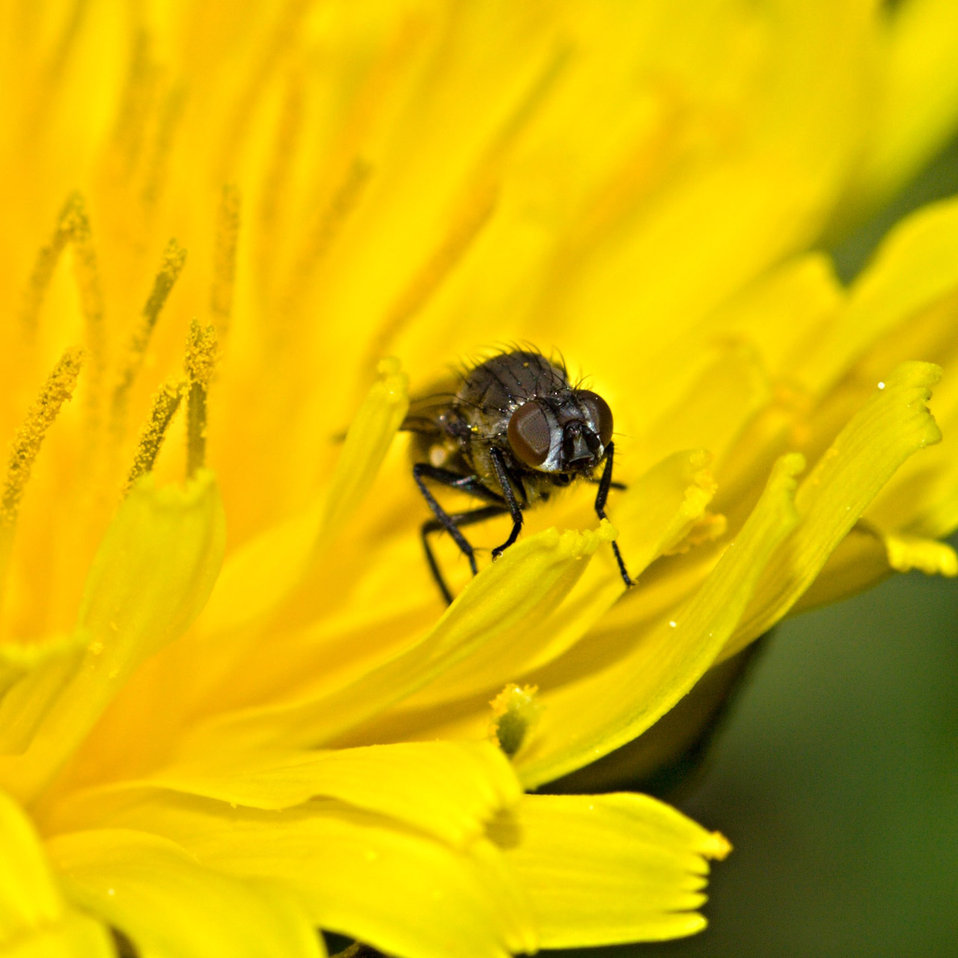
I am hiding in flower

Fly is hiding.